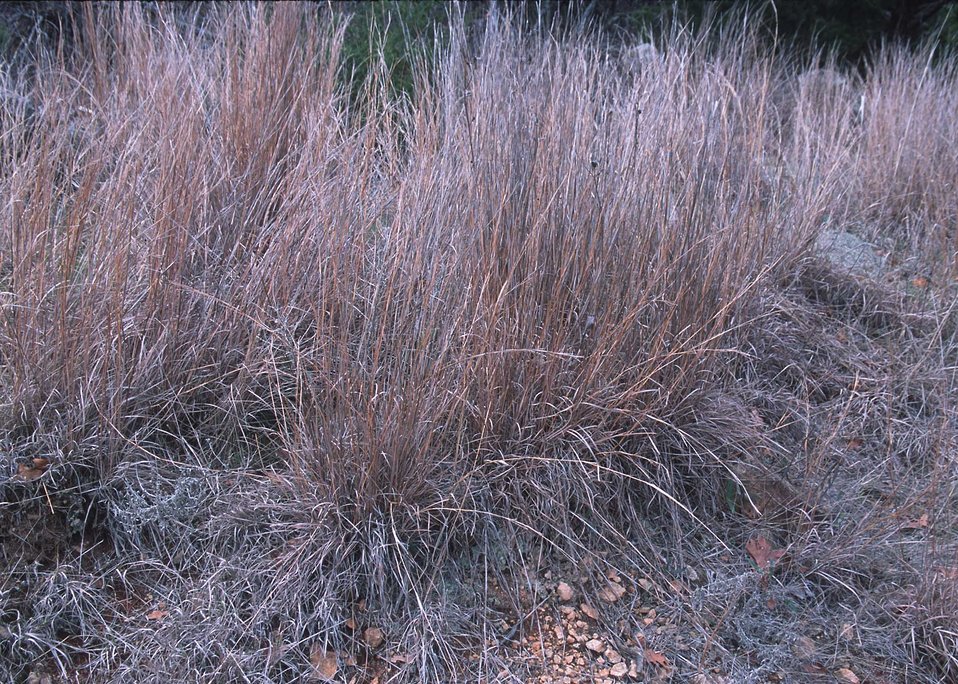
Bluestem establishes cover after a prescribed burn one year earlier on the Witchita National Wildlife Refuge. Oklahoma.